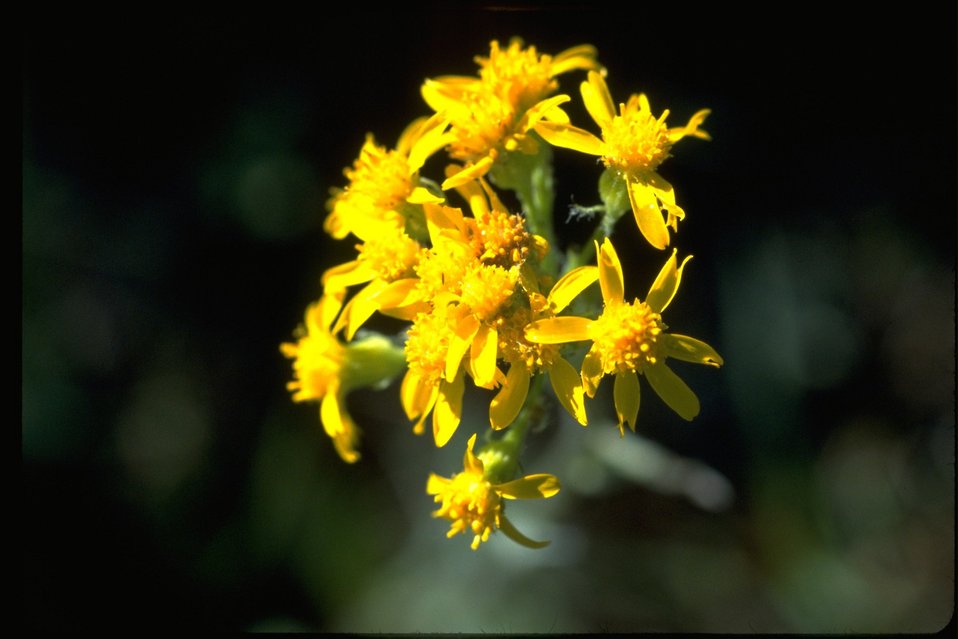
Close up shot of Arrowleaf Groundsel.